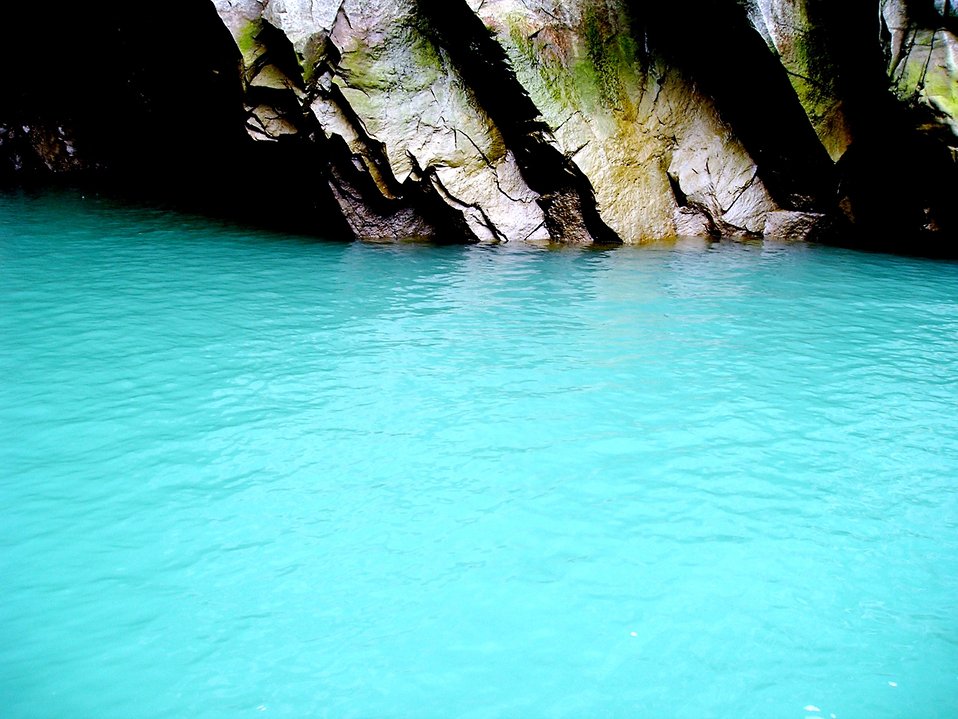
Glacial outflow with characteristic aquamarine color where glacial meltwater merges with the salt water of the fjord.